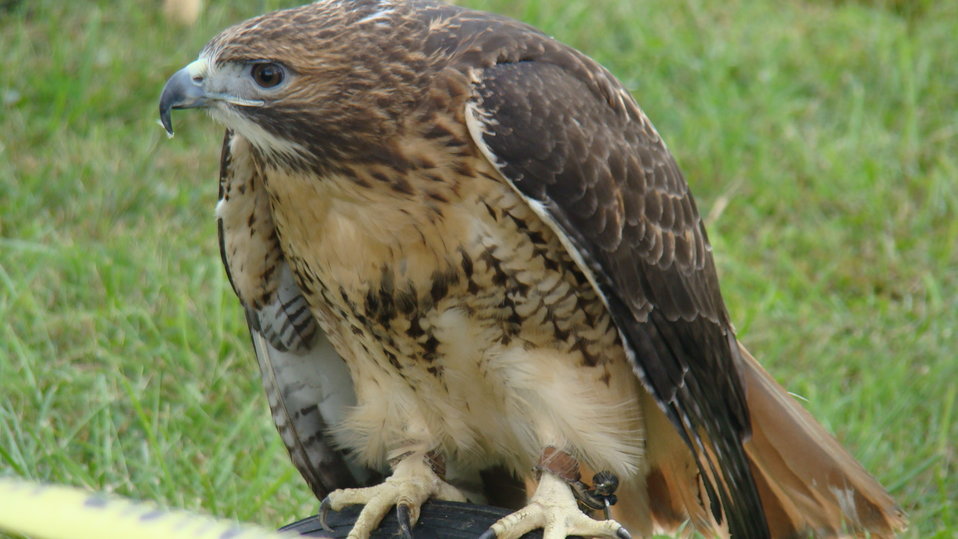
Rappahannock River Valley NWR 15th Anniversary

The Raptor Conservancy exhibit displayed live raptors, like this red-tailed hawk, for attendees.